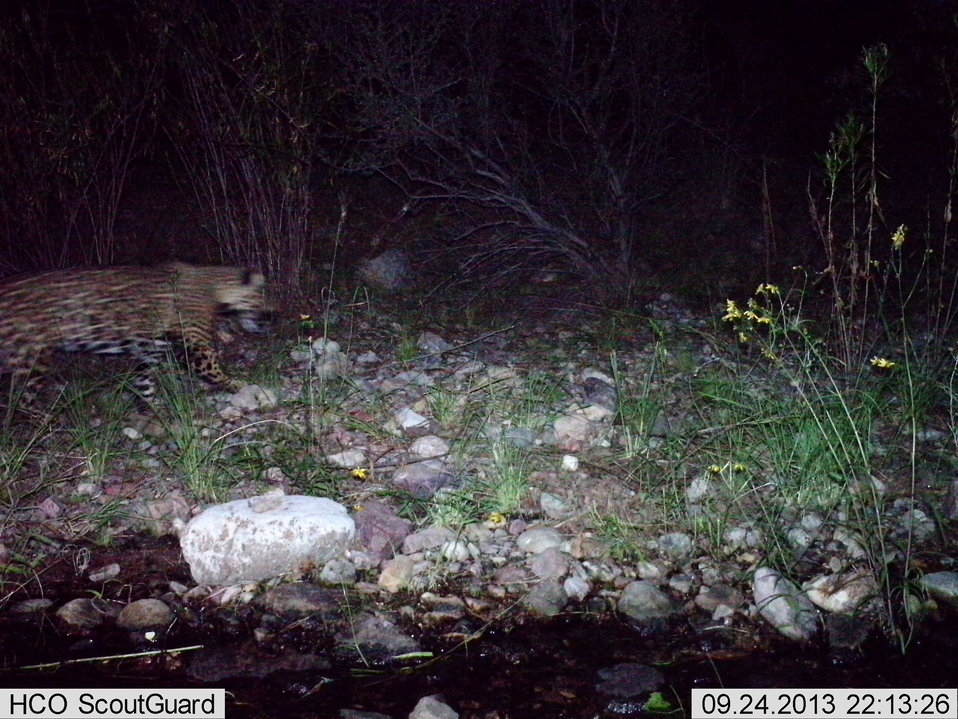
Male jaguar photographed by automatic wildlife cameras in the Santa Rita Mountains on September 24, 2013, as part of a U.S. Fish and Wildlife Service/Department of Homeland Security-funded jaguar survey conducted by University of Arizona. This photo was taken at a new location.